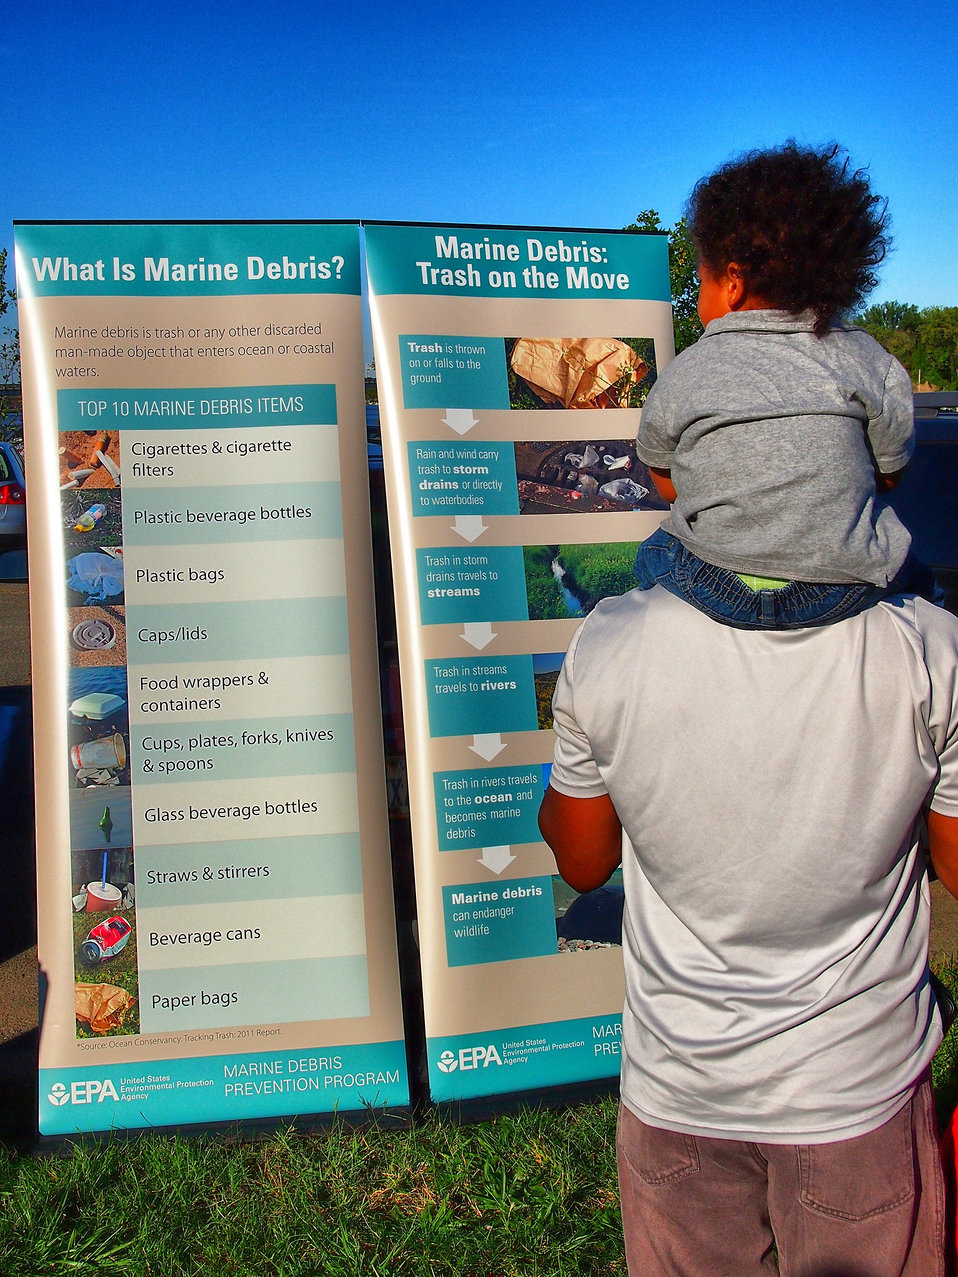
September 15, 2012 Father and son learn about marine debris at Anacostia River cleanup

A man and his son read the EPA marine debris banners while passing through Anacostia Park in Washington, D.C. during the 2012 International Coastal Cleanup.

During the 2011 ICC Day, nearly 600,000 registered volunteers removed over 9 million pounds of trash from cleanup sites around the world. The top ten items found included cigarettes, caps/lids, plastic beverage bottles, plastic bags, and food wrappers/containers.

For more information about the 2011 ICC, please visit Ocean Conservancy's 2012 Data Release webpage